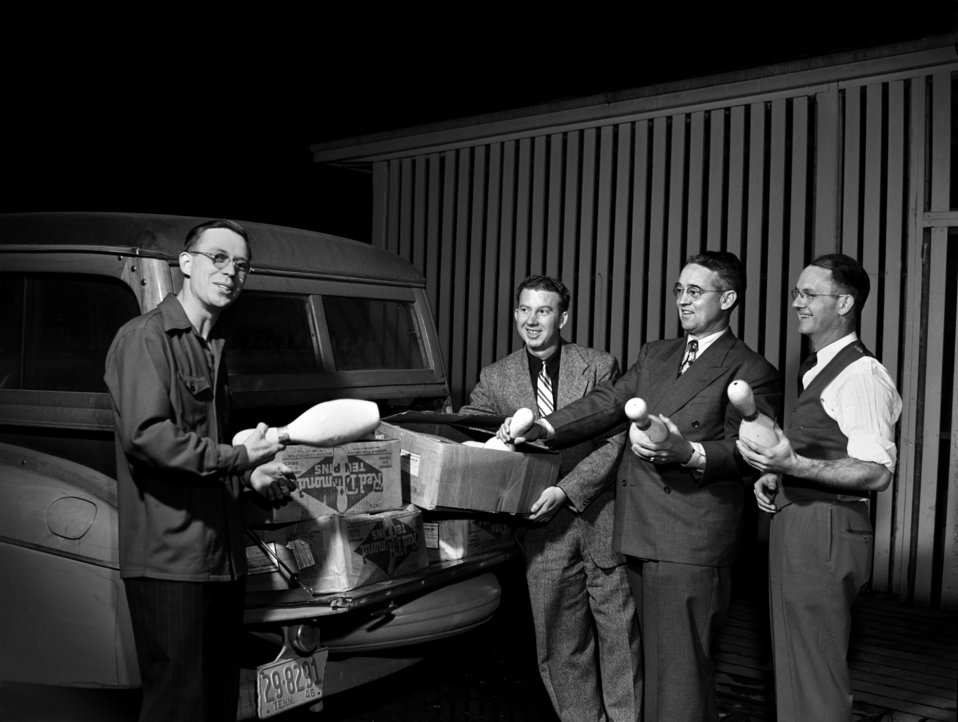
Bowling Oak Ridge 1947

3299-2a DOE photo Ed Westcott 2-16-1947 Oak Ridge Tennessee L to R Walt Rodger, Cliff Davis, C.E. Laurence, and Carl Yearwood